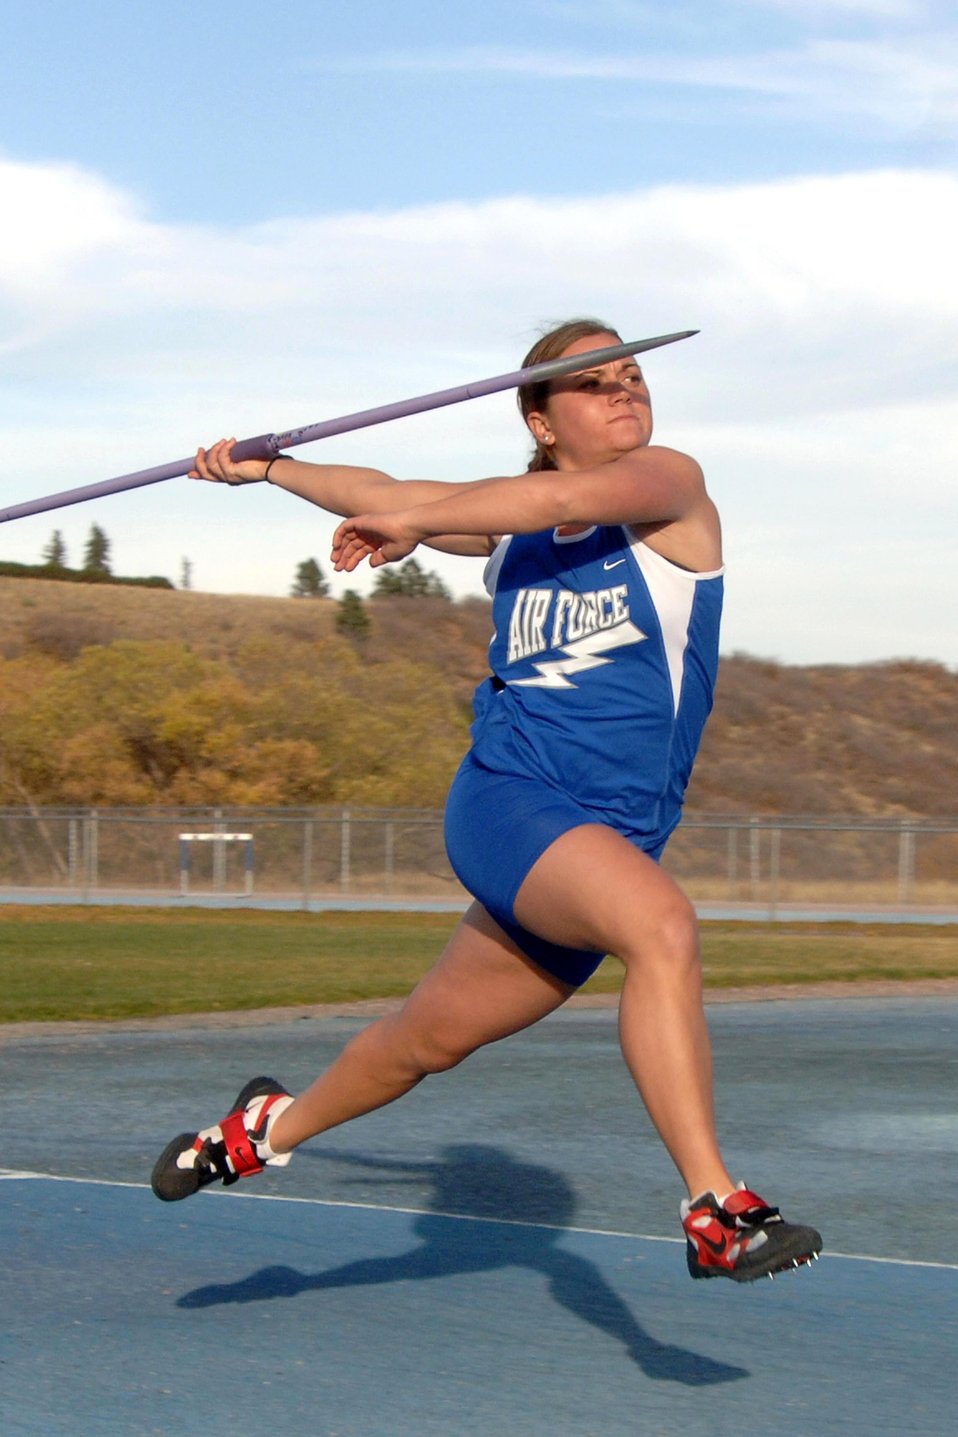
Academy javelin star adds to her trophy shelf

Dana Pounds, a 2006 graduate of the U.S. Air Force Academy, was named the Female Field Event Athlete of the Year for the Mountain Region by the U.S. Track and Field and Cross Country Coaches Association June 1.